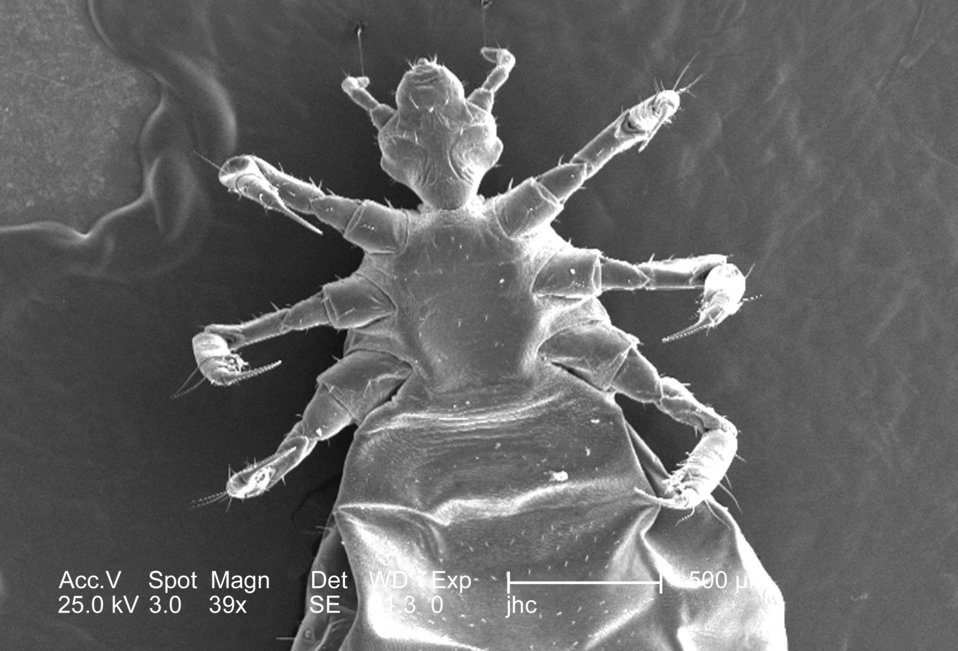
This was one of five scanning electron micrographic (SEM) images (PHIL# 9243 - 9247), successively magnified at higher and higher values, which focused on the head region of a female body louse, Pediculus humanus var. corporis from a ventral perspective. At a relatively low magnification, this SEM revealed some of the insect's exoskeletal morphology exhibited by its cephalic, or head region, thoracic, and proximal abdominal regions. Of interest is the jointed configuration of its six extremities, from which it derived its classification in the phylum of Athropoda, i.e., Arthro from "joint', and poda from "leg").